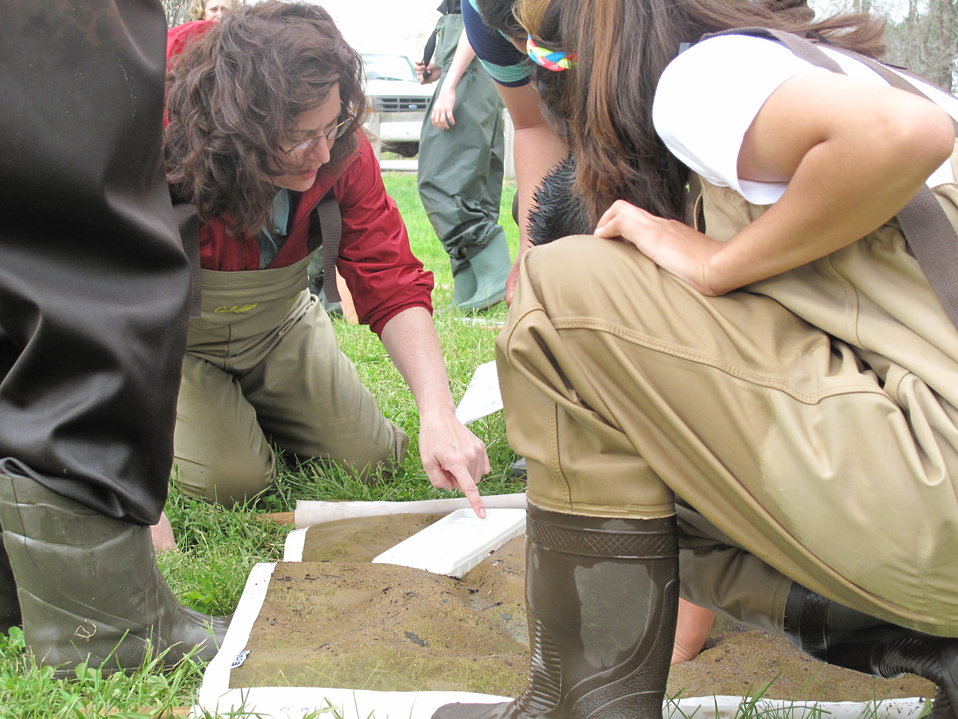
Janet Mizzi points out macroinvertebrates

Over the course of four days in late April 2014, every eighth grade student at North Carolina’s Macon Middle School, Highlands School, Nantahala School, and Trimont Christian Academy visited Cartoogechaye Park, in Macon County, to learn about rivers.

The students rotated through four stations:
1) water chemistry where they had the opportunity to help test water from Cartoogechaye Creek to gain an idea of the stream’s water quality;
2) aquatic insects, where students collected and identified animals like mayflies and caddisflies, learning how life in the river reflects the health of the river
3) fish, where they were able to collect and identify fish in the stream, and then
4) stream flow, where they measured and calculated the downstream movement of water, including the velocity of the water and the total volume of water being moved per second.

The event was organized by the University of Georgia's Coweeta Long-Term Ecological Research (LTER) Program, which is based at the USFS Coweeta Hydrologic Laboratory. (coweeta.uga.edu/), with sizable support from the Land Trust for the Little Tennessee. Other supporters include the U.S. Fish and Wildlife Service, N.C. Natural Heritage Program, and N.C. Division of Water Resources.